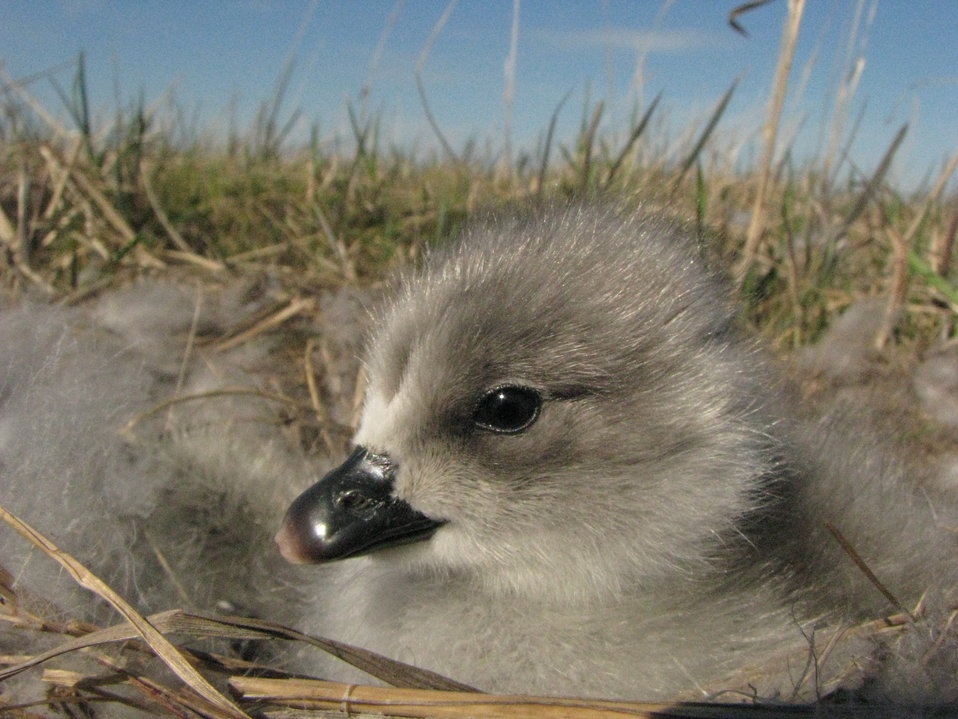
Close up of emperor goose gosling

USFWS Yukon Delta NWR